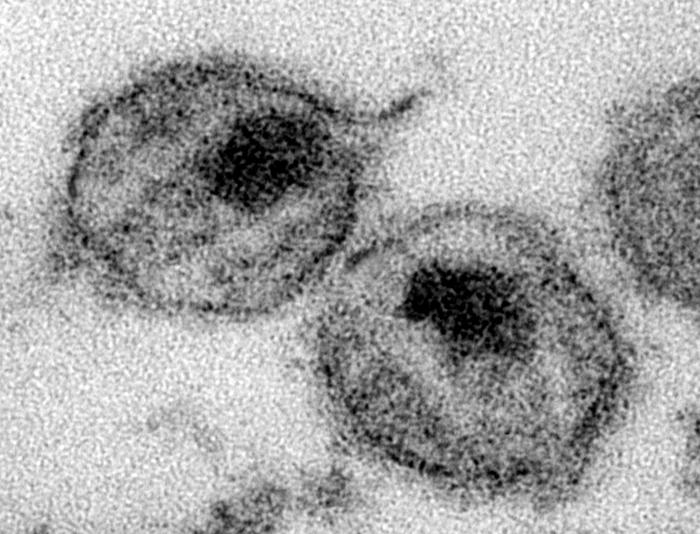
This thin-section transmission electron micrograph (TEM) depicted the ultrastructural details of a number of 'human immunodeficiency virus' (HIV) virus particles, or virions. A member of the genus Lentivirus, HIV is separated into two serotypes, HIV-1 and HIV-2, and is the cause for the disease known as acquired immunodeficiency syndrome, or AIDS. This virus may be passed from one person to another when infected blood, semen, or vaginal secretions come in contact with an uninfected person's broken skin or mucous membranes*. In addition, infected pregnant women can pass HIV to their baby during pregnancy or delivery, as well as through breast-feeding. People with HIV have what is called HIV infection. Some of these people will develop AIDS as a result of their HIV infection. See PHIL 10860 for a colorized version of this image.